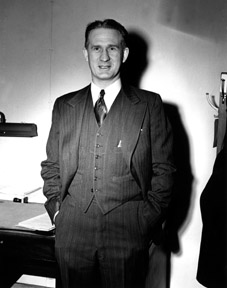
Informal portrait of Walter H. Zinn.